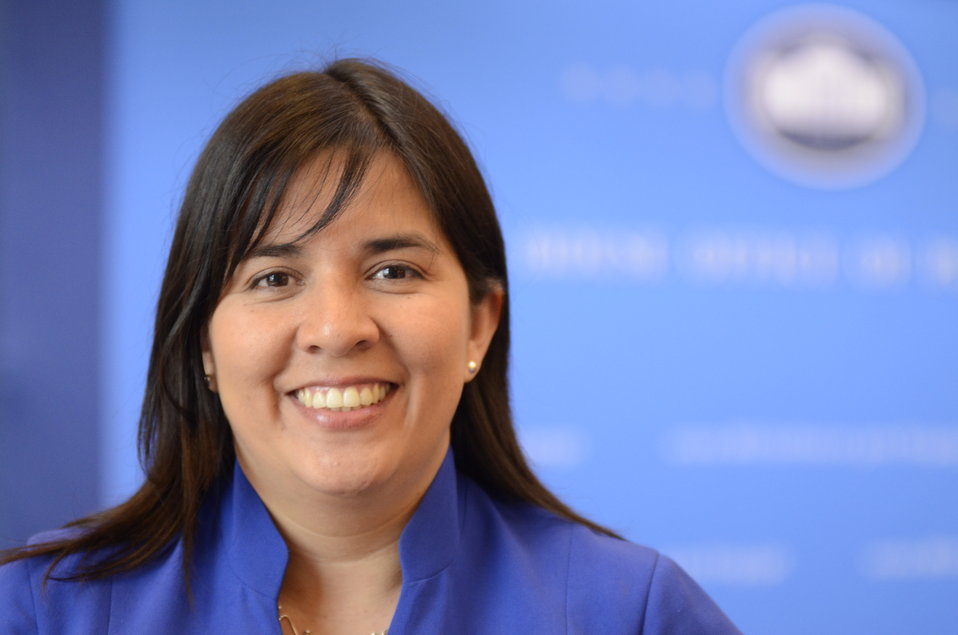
Catholic Medical Mission Board Project Director Dr. Claudia Llanten is one of eleven honorees recognized for her efforts to reduce hunger and increase food security in the U.S. and internationally at the White House Champions of Change Strengthening Food Security at Home and Abroad Event held at the White House on Thursday, September 6, 2012.